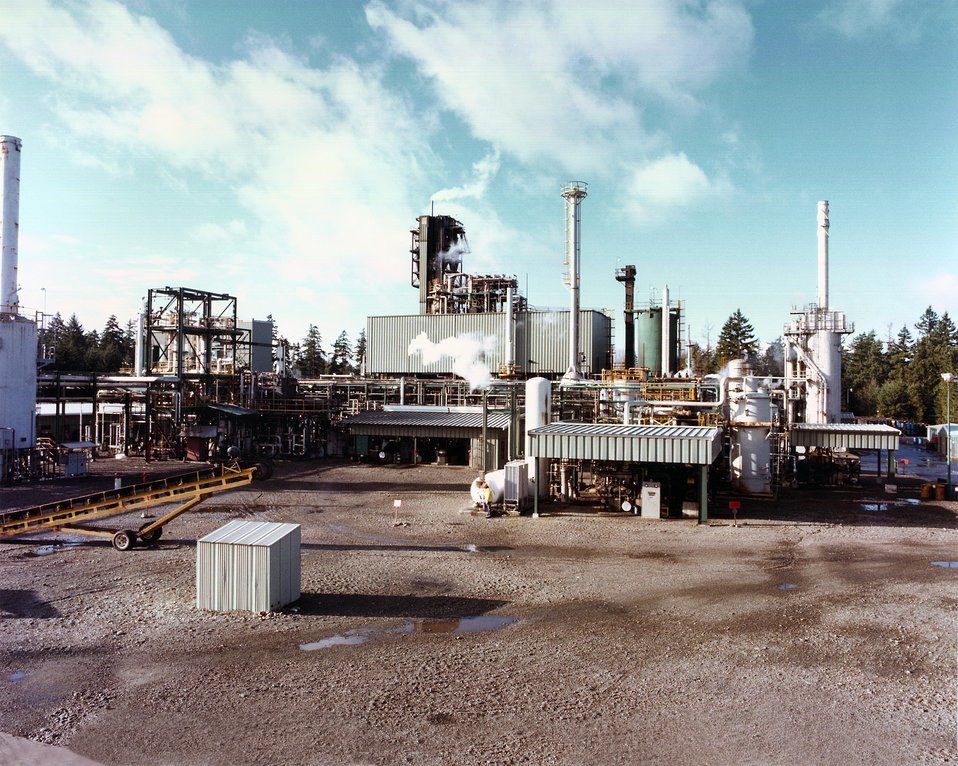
VIEW OF THE SOLVENT REFINED COAL PILOT PLANT, FROM THE EAST.